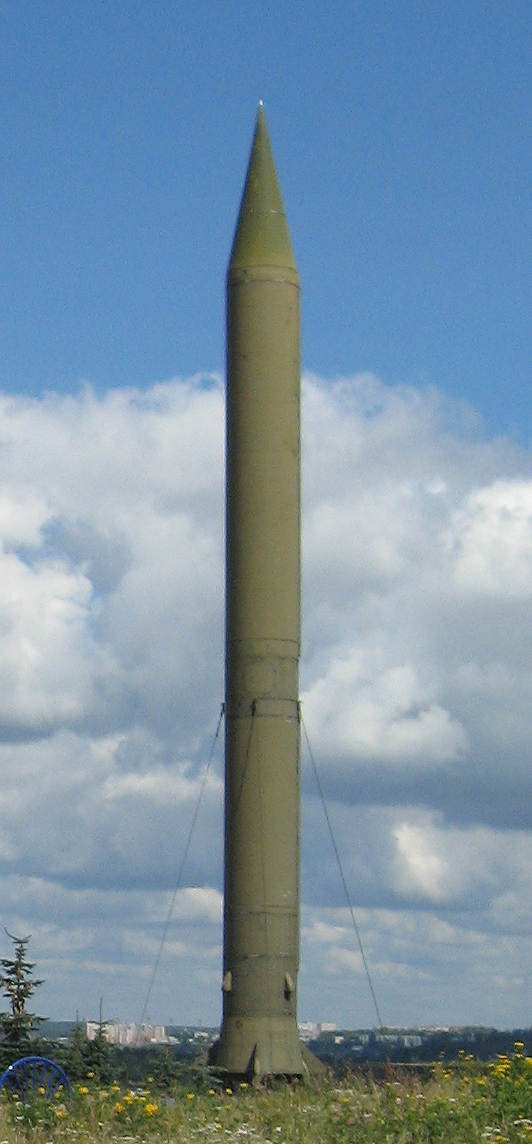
Русский: Макет ракеты Р-12 в музее истории космонавтики г. Калуги.